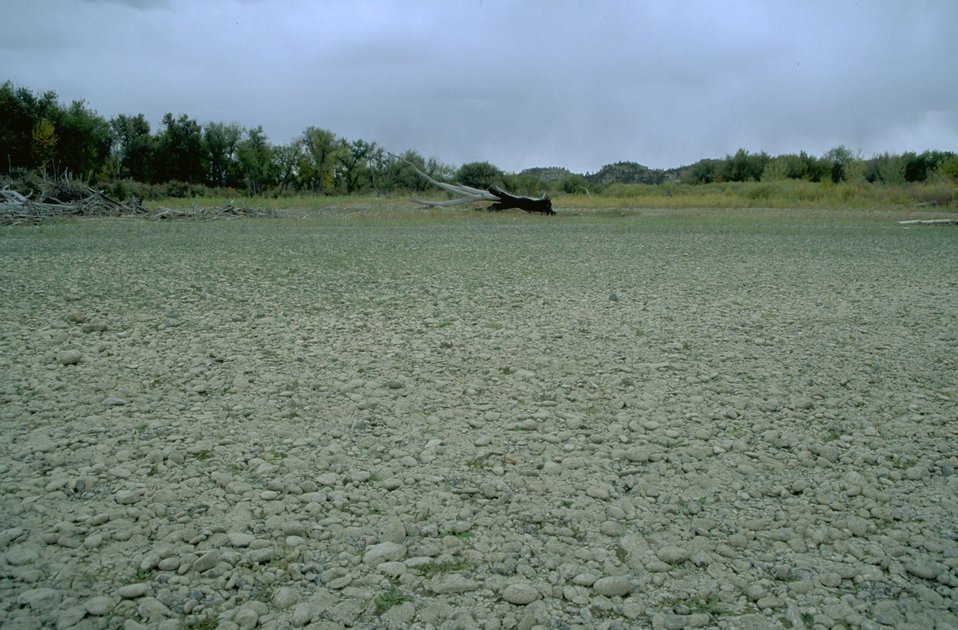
Driftwood on the shore of the Yellowstone River